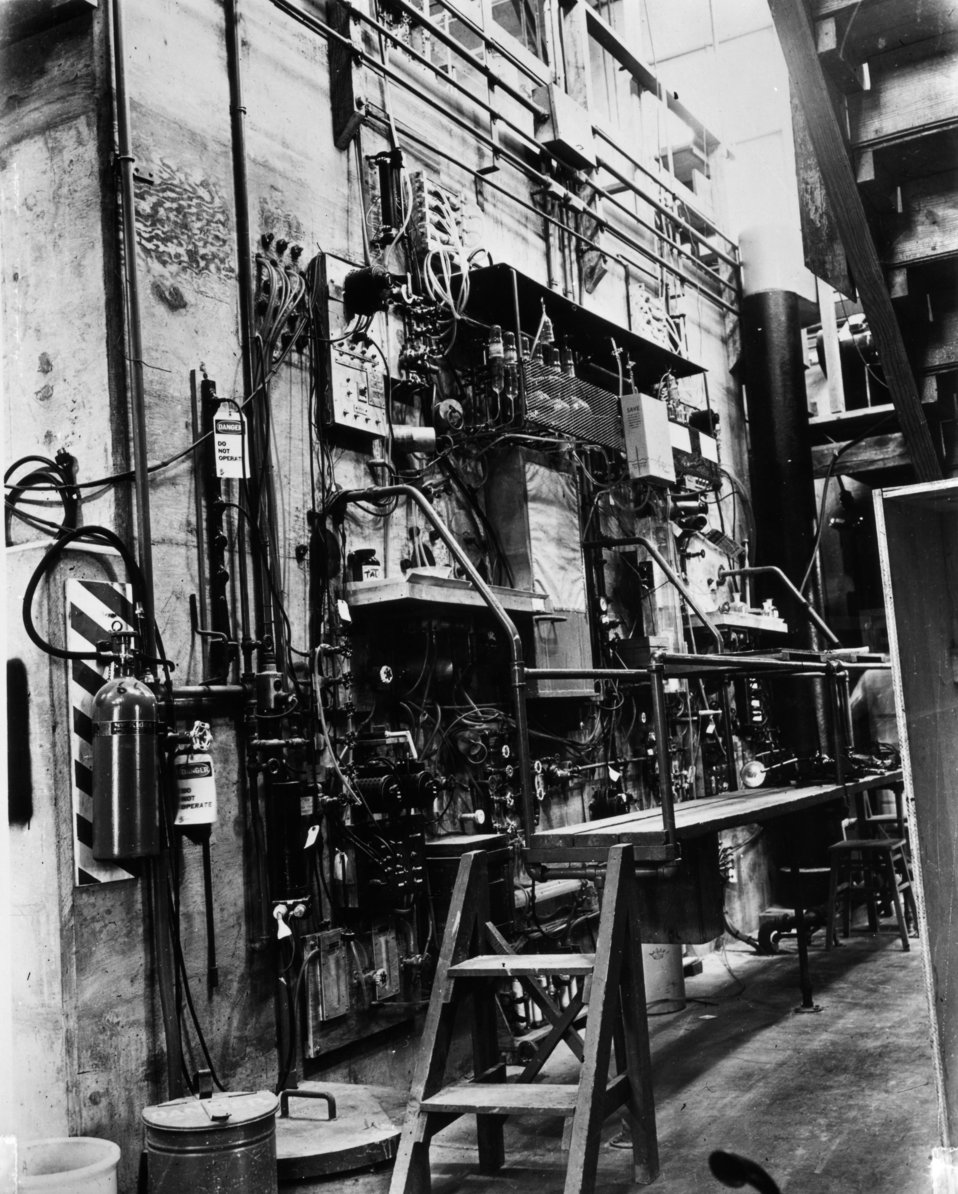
X-10 at Oak Ridge